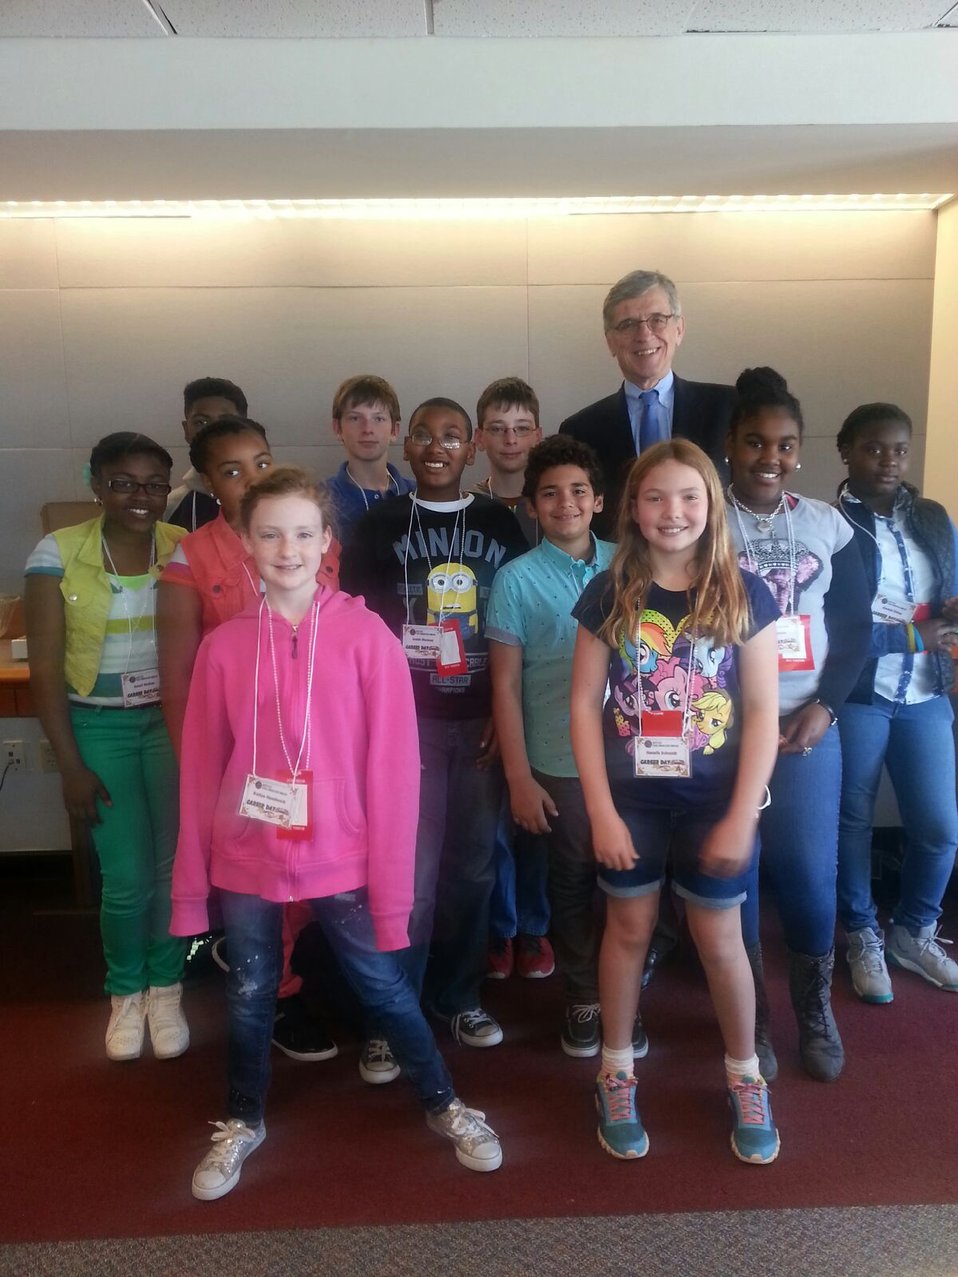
4.24.2014 Take Your Child to Work Day

Career Day Kids with FCC Chairman Wheeler.